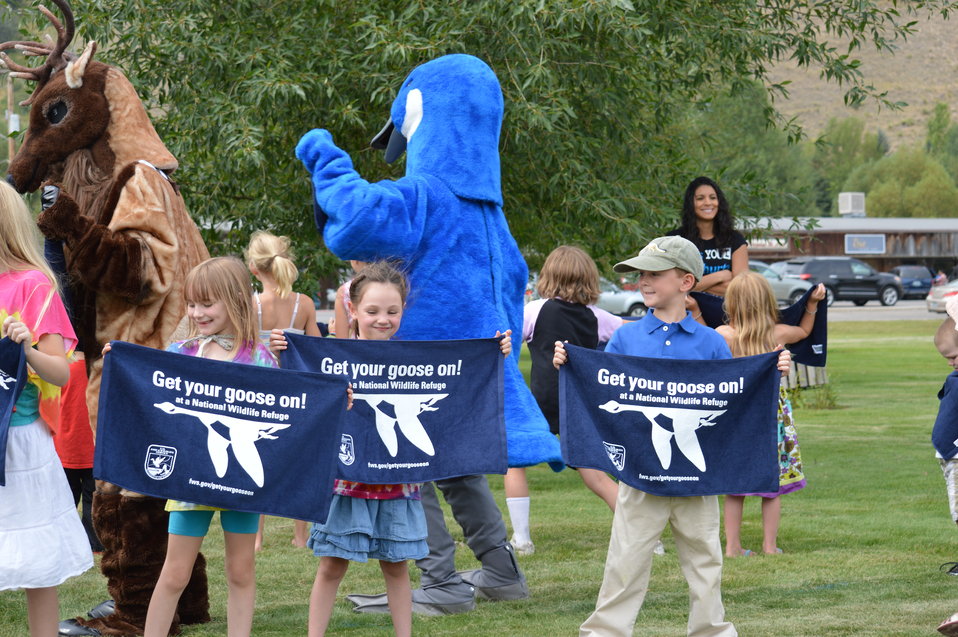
Get Your Goose On! - National Elk Refuge Style

On August 10, 2012 the U.S. Fish and Wildlife Service and Partners celebrated the 100 year anniversary of the establishment of the National Elk Refuge. In these photos, young attendees, along with Puddles the Blue Goose and the National Elk Refuge's mascot, showed us how to Get Your Goose On! with style.